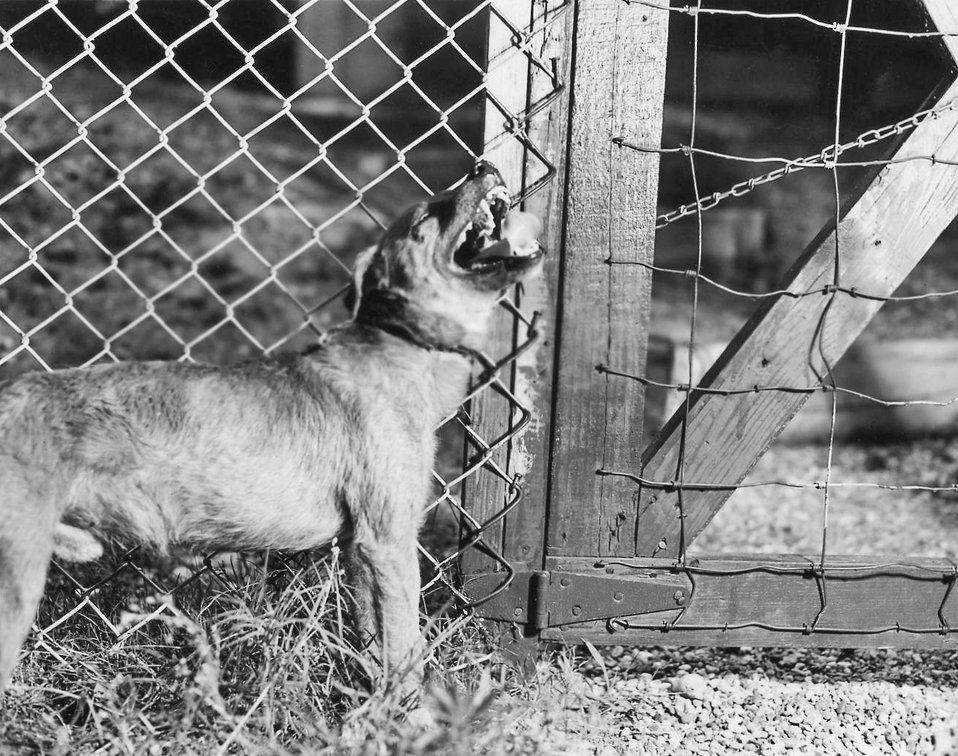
This photograph shows a canine suspected of being rabid that had been exhibiting signs of restlessness, and overall uncharacteristic aggressive behavior, which are two symptoms of rabies. Other symptoms of rabies in pets may include impaired walking, eating and drinking.